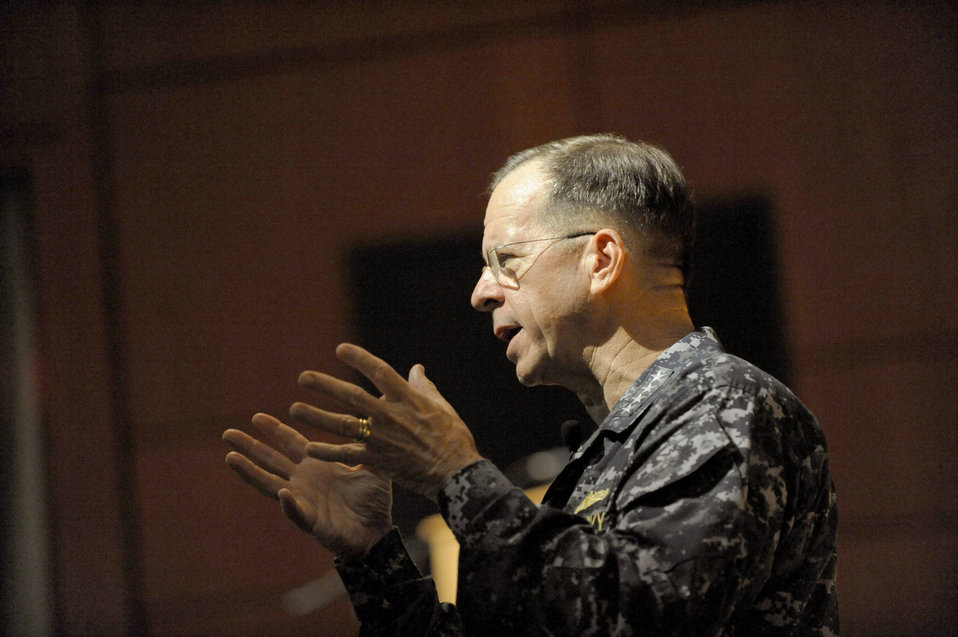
Mullen: U.S. Servicemembers constitute 'best military'

Navy Adm. Michael G. Mullen gives his remarks during an all-hands call at the base theater June 3, 2010, on Joint Base Charleston, S.C. During his visit, Admiral Mullen fielded questions from Airmen and addressed Department of Defense policy changes and expectations.